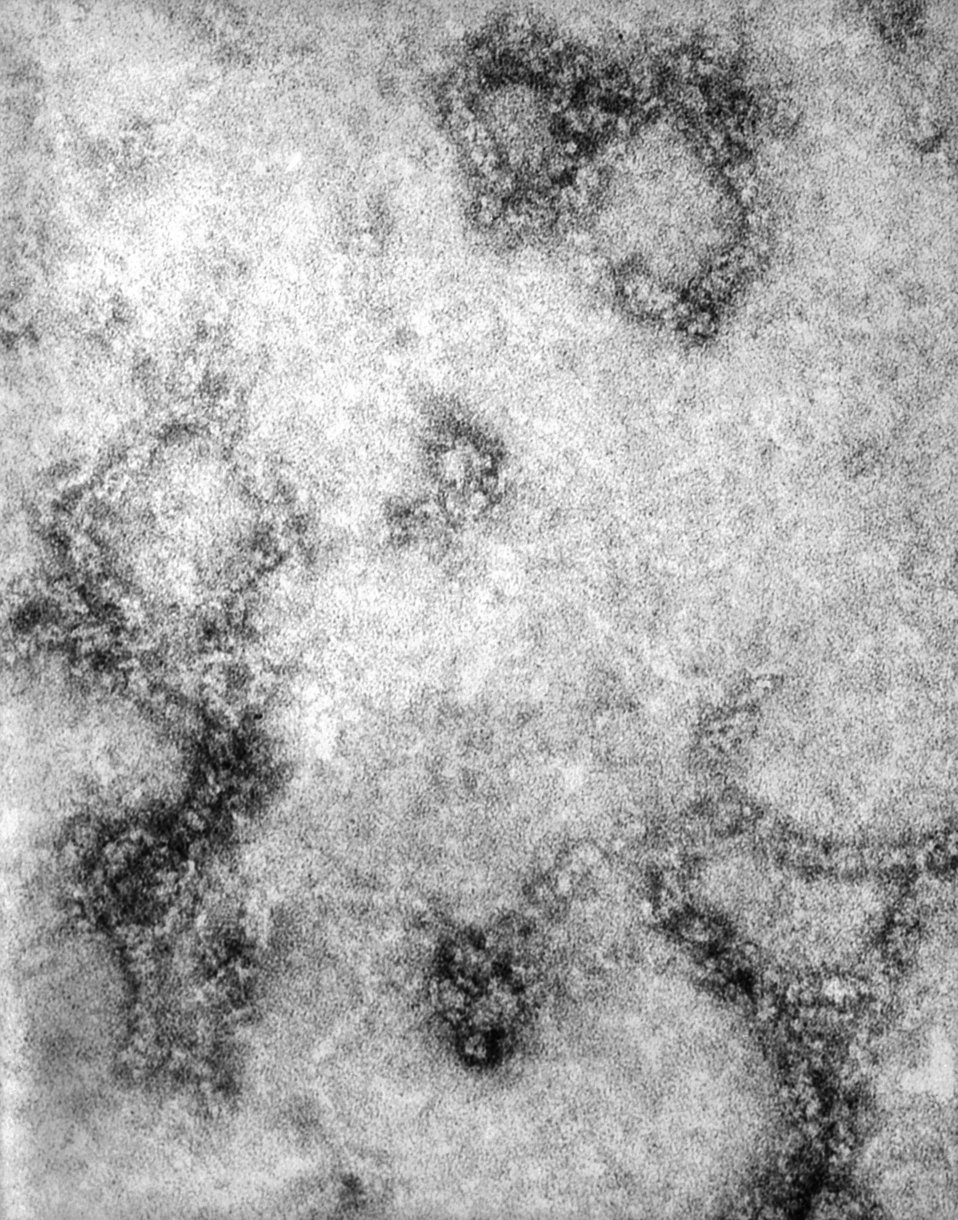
This negatively-stained transmission electron micrograph (TEM) revealed the presence of La Crosse (LAC) encephalitis virus ribonucleoprotein particles (RNP). LAC virus is a member of the Bunyaviridae virus family, California serogroup. This is an arbovorus, which means that transmission occurs through the bite of an infected arthropod, which in this case, is the treehole mosquito, Aedes triseriatus. LAC can also be transmitted through the bite of infected vertebrates including chipmunks and squirrels.